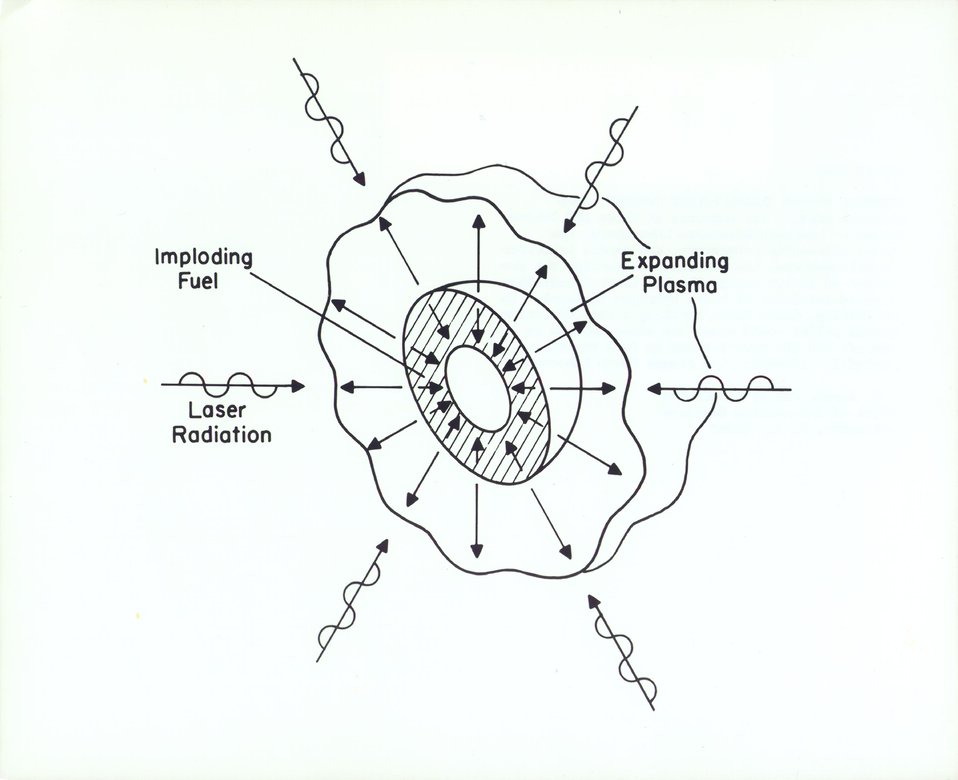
INERTIAL SYSTEM (LASER-PELLET FUSION)...New research studies are underway at three AEC laboratories -- Lawrence Livermore Laboratory, Los Alamos Scientific Laboratory, and Sandia Laboratories, (Albuquerque, New Mexico) -- to develop the production of fusion energy through laser irradiation of solid particles of heavy hydrogen isotopes. c. 1973